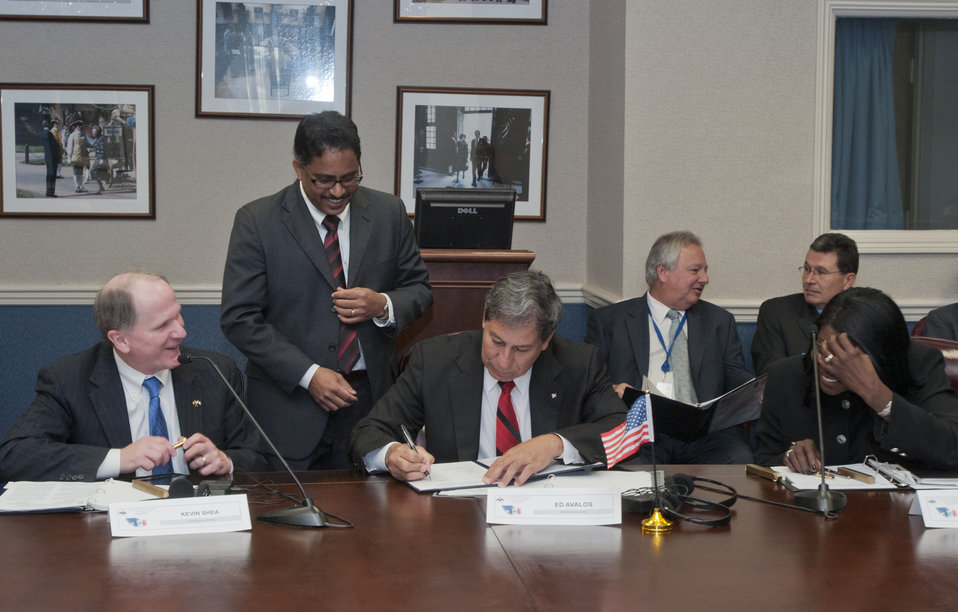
The U.S. Department of Agriculture’s (USDA) 73rd and Final Commissioners Meeting of the U.S. – Mexico Cooperative Screwworm Program sign a Memorandum of Understanding (MOU) in the Williamsburg room at USDA in Washington, D.C. on Oct. 5, 2012. (L to R U.S. Department of Agriculture (USDA) Animal and Plant Health Inspection Service (APHIS) Associate Administrator Kevin Shea, Agriculture Under Secretary Marketing and Regulatory Programs (MRP) Ed Avalos, and USDA Agricultural Research Service National Programs Associate Administrator Chavonda Jacobs-Young.